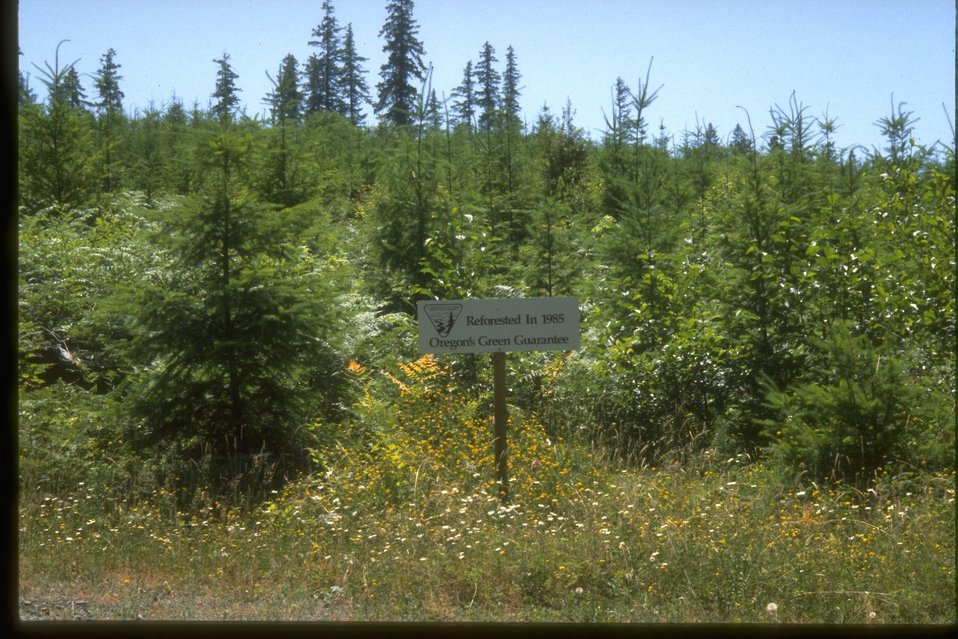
Reforested area with a sign.